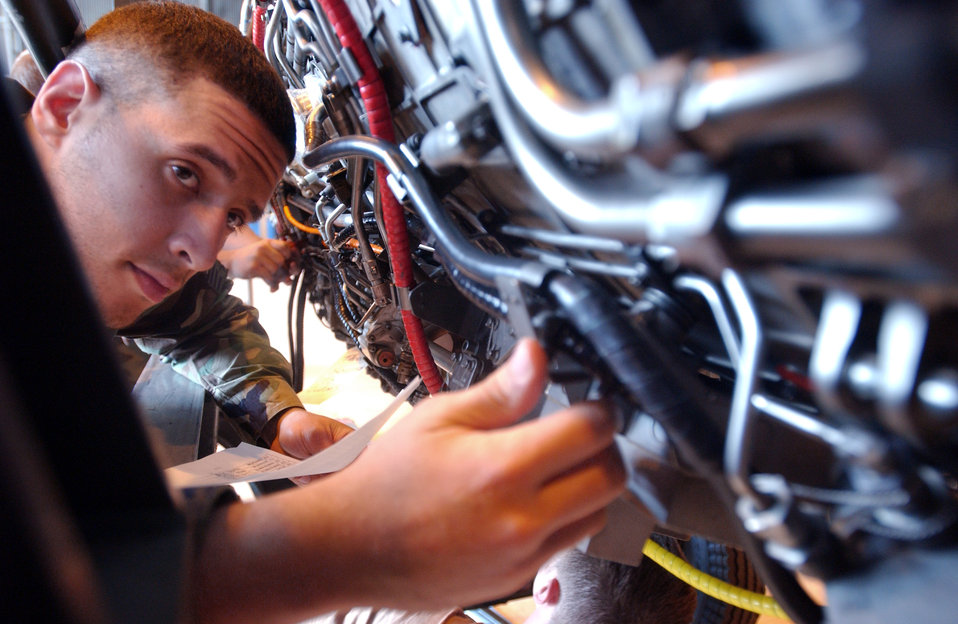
Cross check

AVIANO AIR BASE, Italy -- Senior Airman Jaorge Valero checks a part's serial number here May 3. Airman Valero is a mechanic assigned to the 31st Maintenance Operations Squadron.